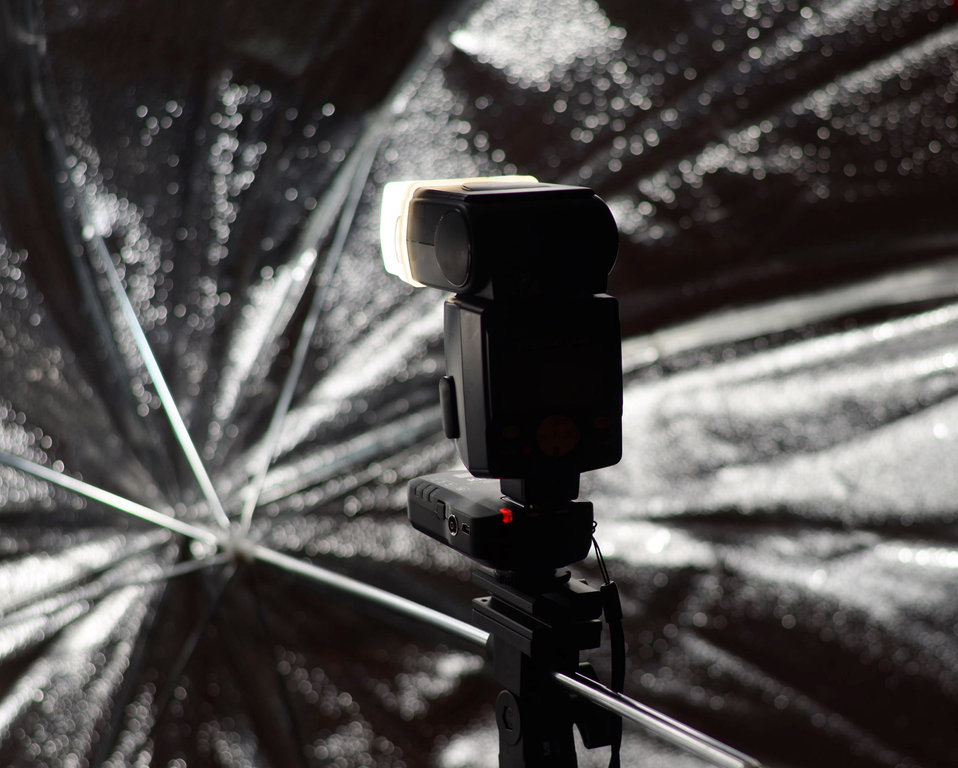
Flash in action - detail

Flash in action.